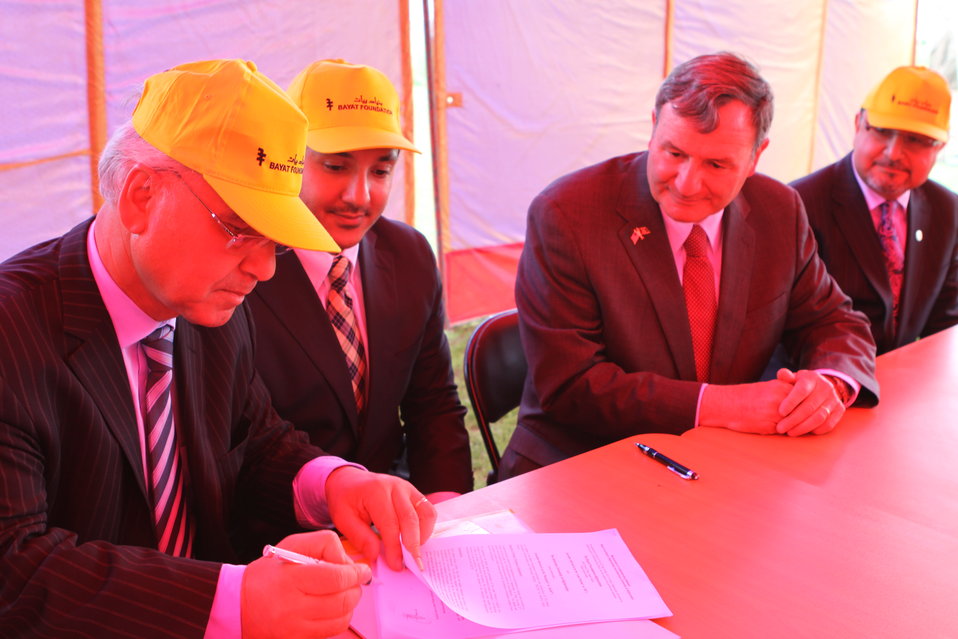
100526 AUAF Graduation 376